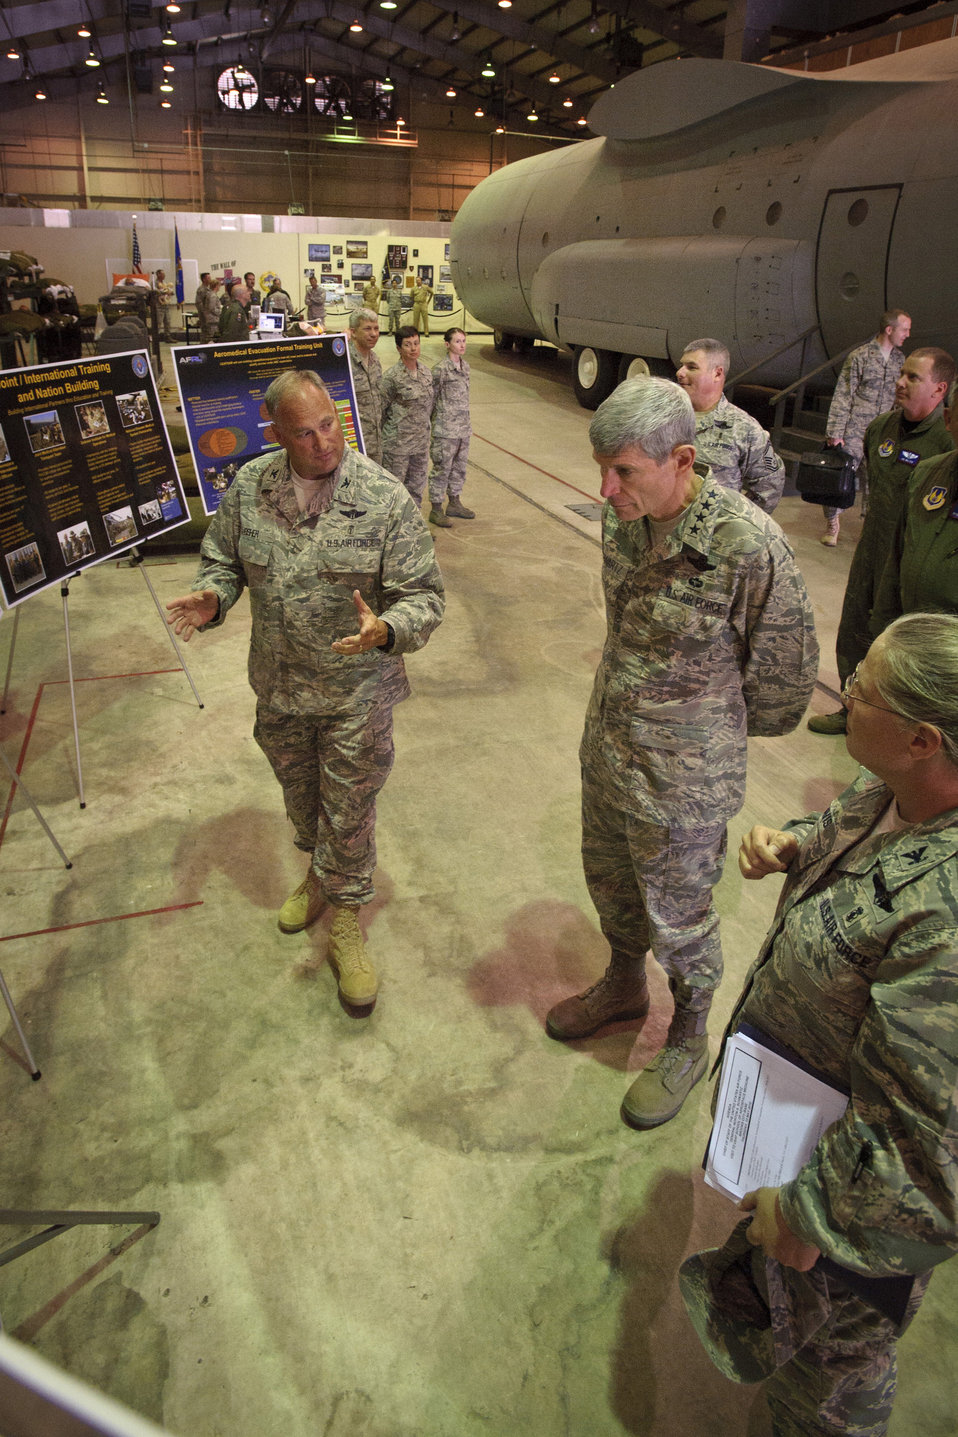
Air Force Chief of Staff visits USAFSAM

Col. Charles Fisher Jr., commander of the U.S. Air Force School of Aerospace Medicine, briefs Air Force Chief of Staff Gen. Norton Schwartz on the capabilities of aerospace medicine training and the impact it has had on the survivability of wounded warriors. General Schwartz was visiting the school May 13, 2010, at Brooks City-Base in San Antonio.